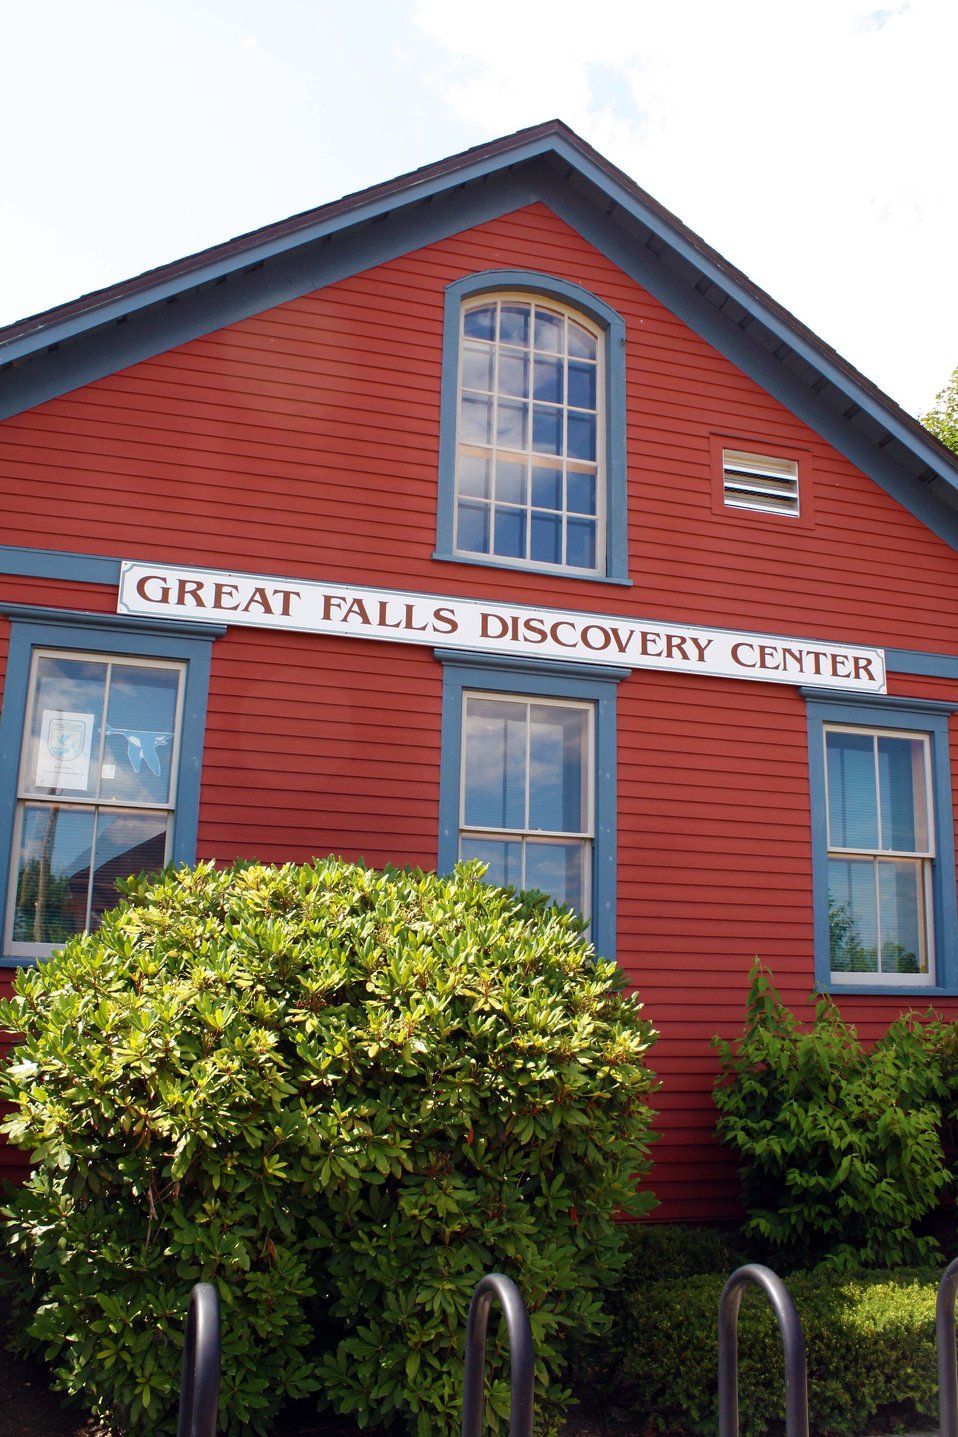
Great Falls Discovery Center

Turners Falls, Massachusetts.